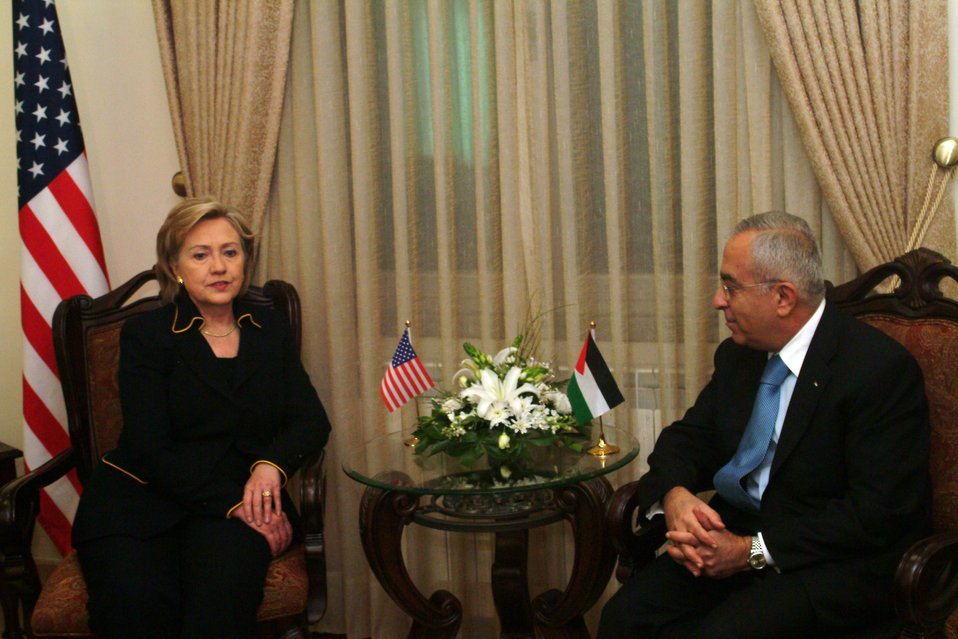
Secretary Clinton With Palestinian Authority Prime Minister

U.S. Secretary of State Hillary Rodham Clinton with Palestinian Authority Prime Minister Salam Fayad in Ramallah March 4, 2009.